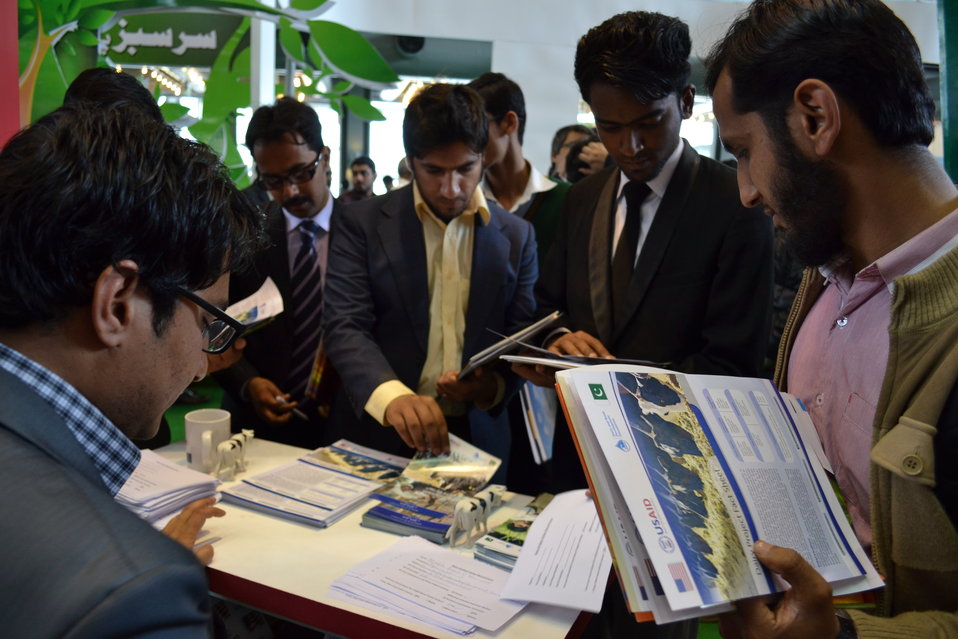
Dairy Project at Dawn Expo 2014